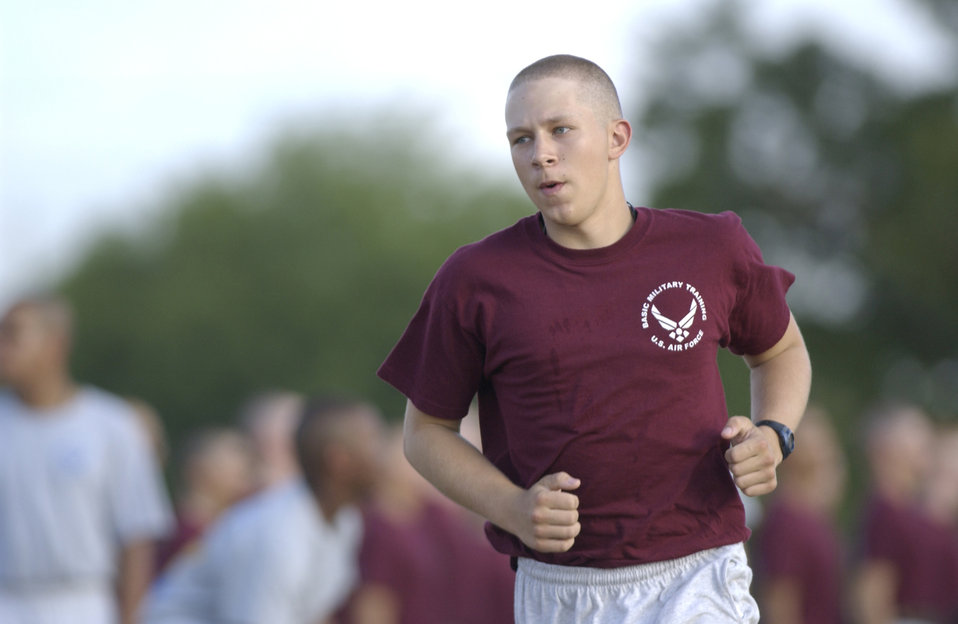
Tomorrow's leaders

LACKLAND AIR FORCE BASE, Texas -- A trainee keeps up the pace during a 2.5-mile formation run which marks the final days of Basic Military Training. As the Air Force transforms into a force that focuses more on physical fitness, so has military training.